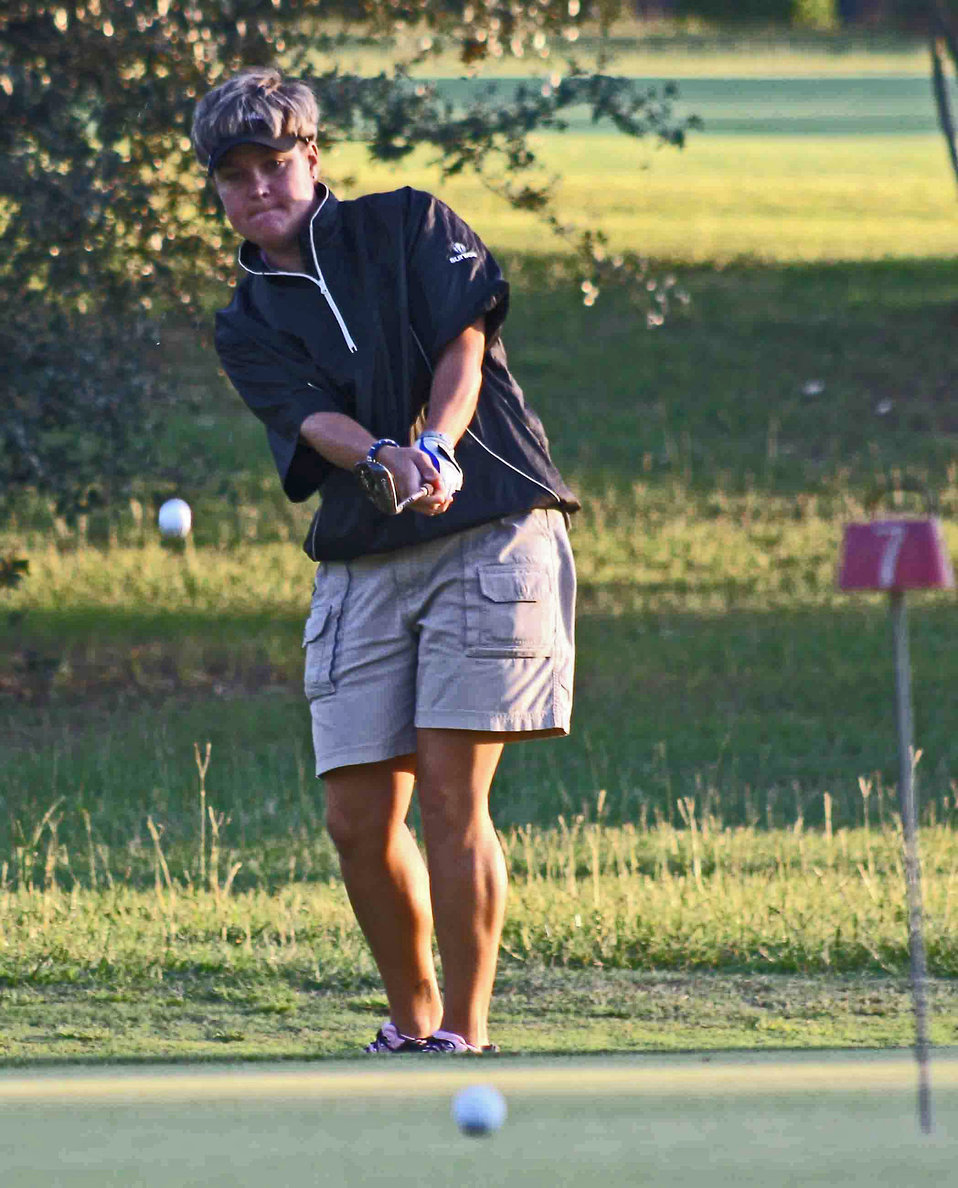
Airmen tee off to represent Air Force

1st Lt. Lori Bartz chips onto the green during practice play in preparation for the All Air Force Training Camp/Championship Sept. 15 at Shaw Air Force Base, S.C. The top six male and top three female players from the tournament will represent the Air Force in the Armed Forces Golf Championship. Lieutenant Bartz, from Seymour Johnson AFB, N.C., took third place for the woman's category.